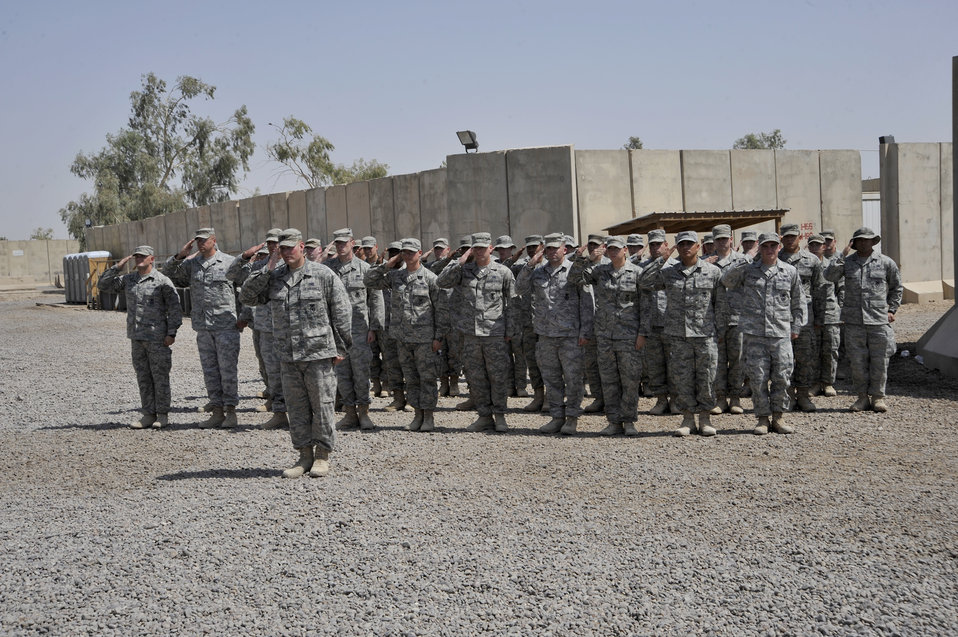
Police transition team

Airmen from the 732nd Expeditionary Security Forces Squadron, Det. 2, give a final salute to Maj. David Lederer during the deactivation of the 732nd ESFS, Det. 2, and the transfer of authority of the police transition team mission to the Army's 94th Military Police Company July 26, 2010, at Camp Stryker, Iraq. Major Lederer is the 732nd ESFS, Det. 2, commander.